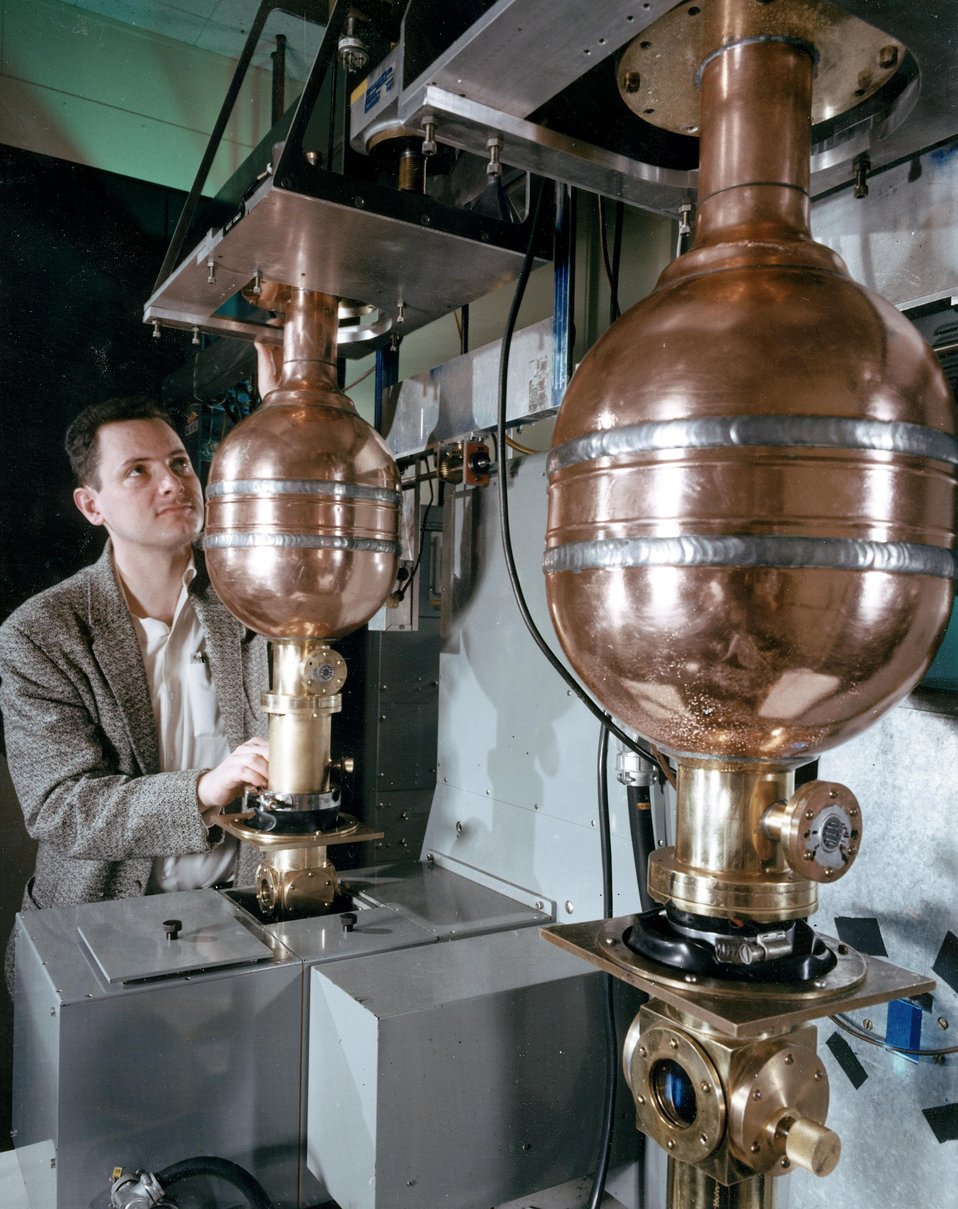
Low temperature research on transparent crystals using a
spectrophotometer and Helium Dewar.